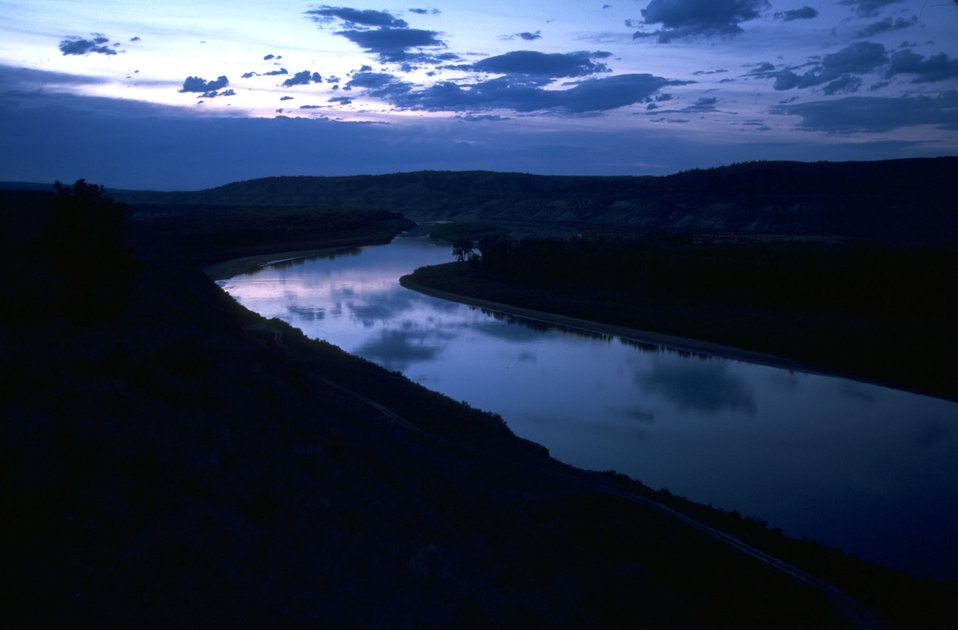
Sunset at Coal Banks Landing